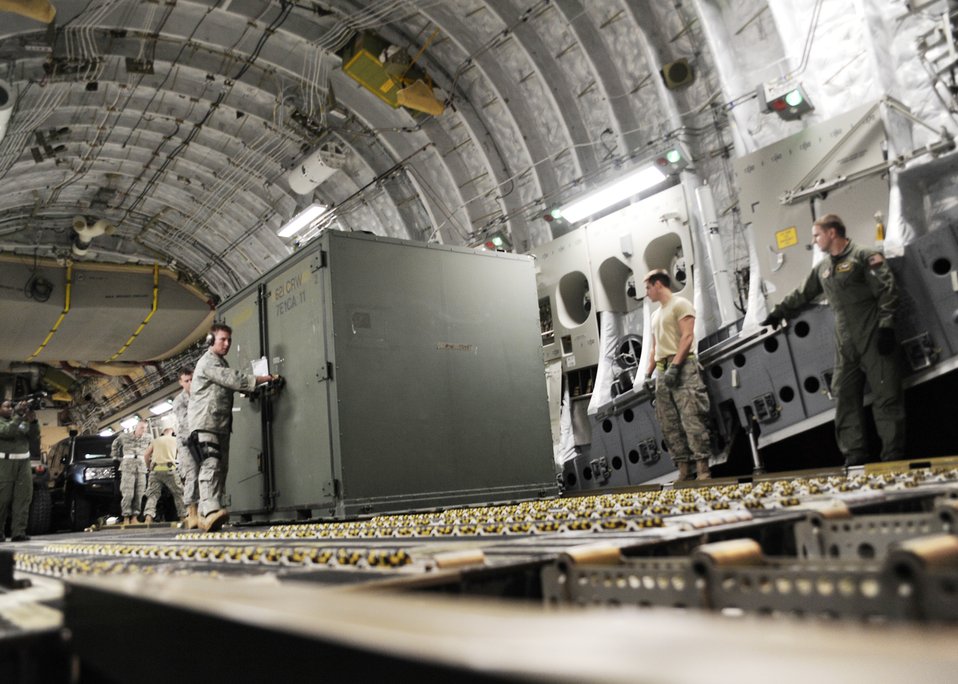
Haiti Humanitarian Effort

Equipment is unloaded from a C-17 Globemaster III in Port-Au-Prince, Haiti, Jan. 15, 2010. Air Mobility Command is assisting the humanitarian relief effort in Haiti by bringing the assets necessary to run airfield operations, air traffic control, command and control, aerial port, maintenance, and security.